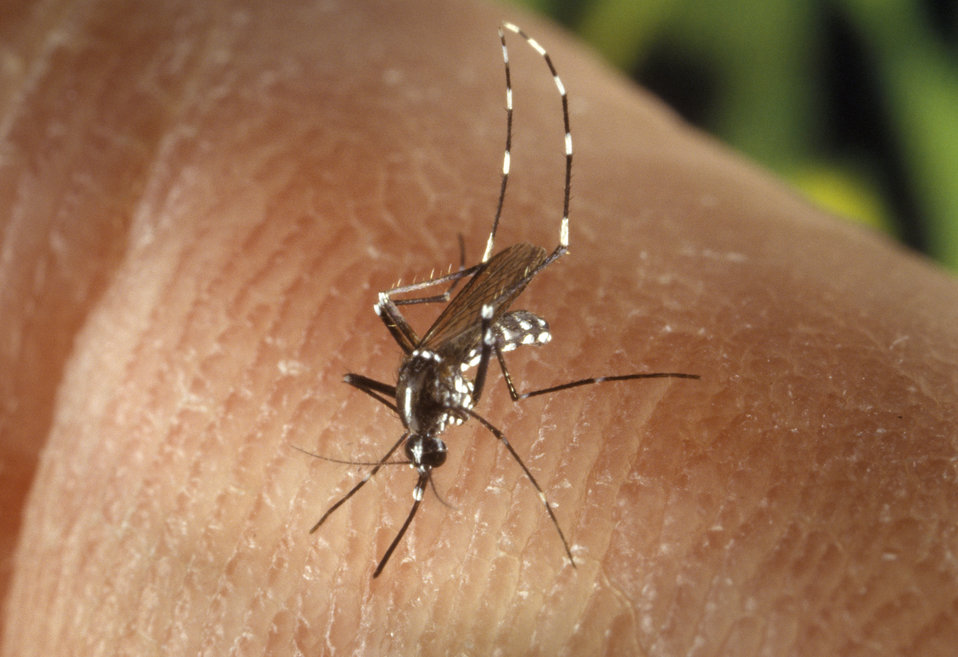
A female Aedes albopictus mosquito feeding on a human host.